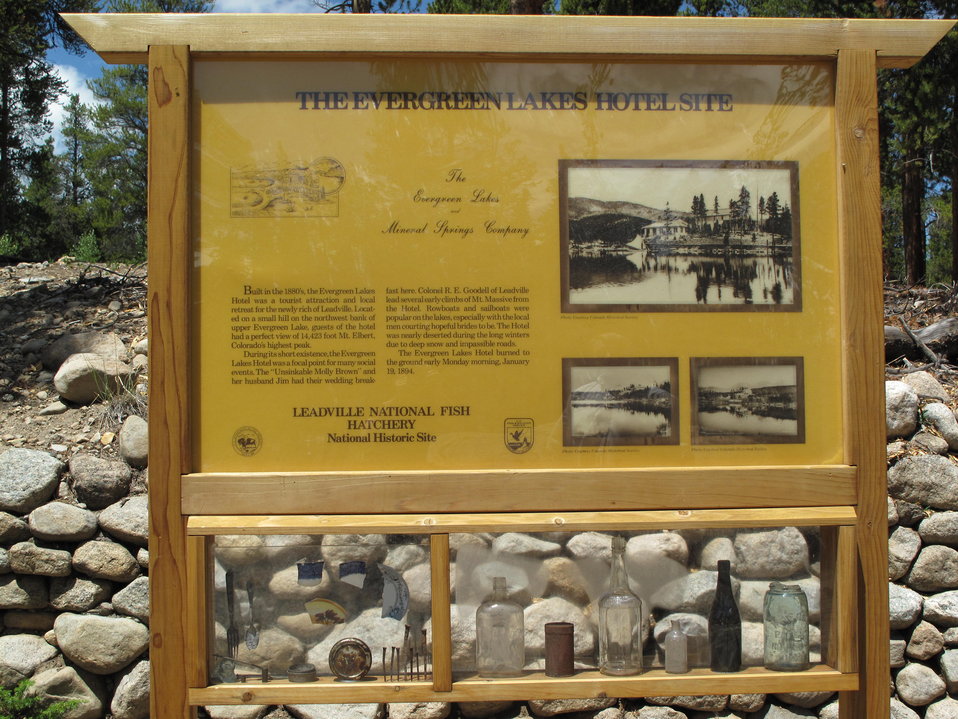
Evergreen Lakes Hotel Sign

Evergreen Lakes, which are located on Leadville National Fish Hatchery's property, were home to a hotel in the late 1880s.